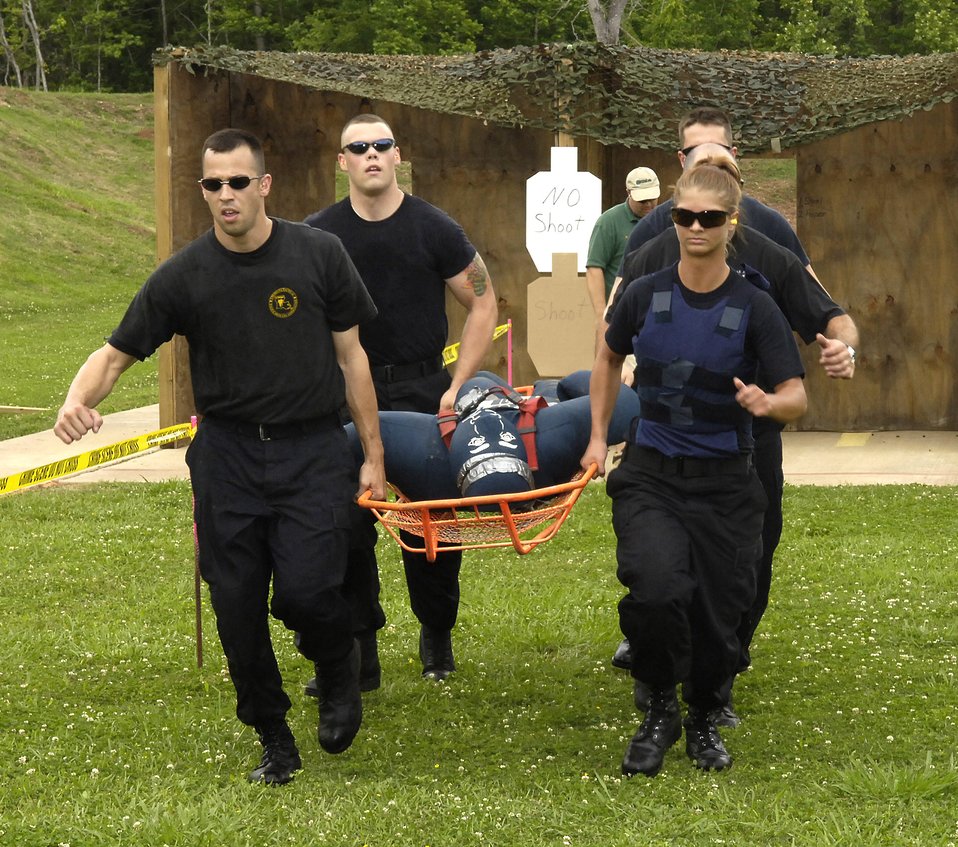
Security forces Airmen at SWAT competition

Members of the Emergency Services Team from Barksdale Air Force Base, La., perform a dummy lift during a timed event at the Louisiana State SWAT Team competition in Alexandria, La., on Tuesday, May 2, 2006.